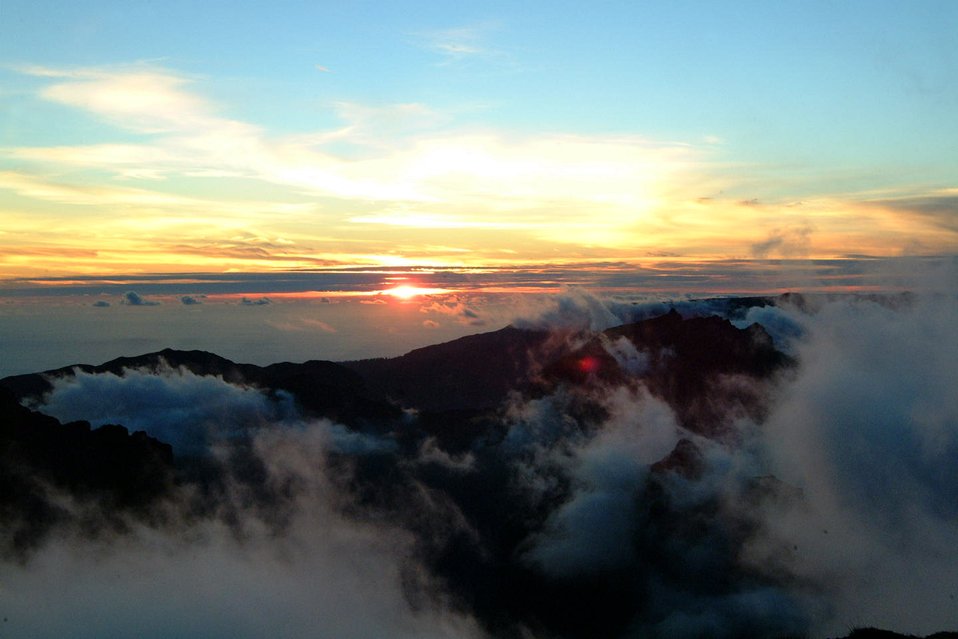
Uploaded by request of Filipa Freitas

Taken in Pico do Arreiro in Madeira's Island - Portugal

It’s a beautiful sunset in one of the higher points in Madeira Island called Pico do Areeiro. It’s a view of extreme beauty and very peaceful, it takes you above and beyond this world. A true Natural Beauty